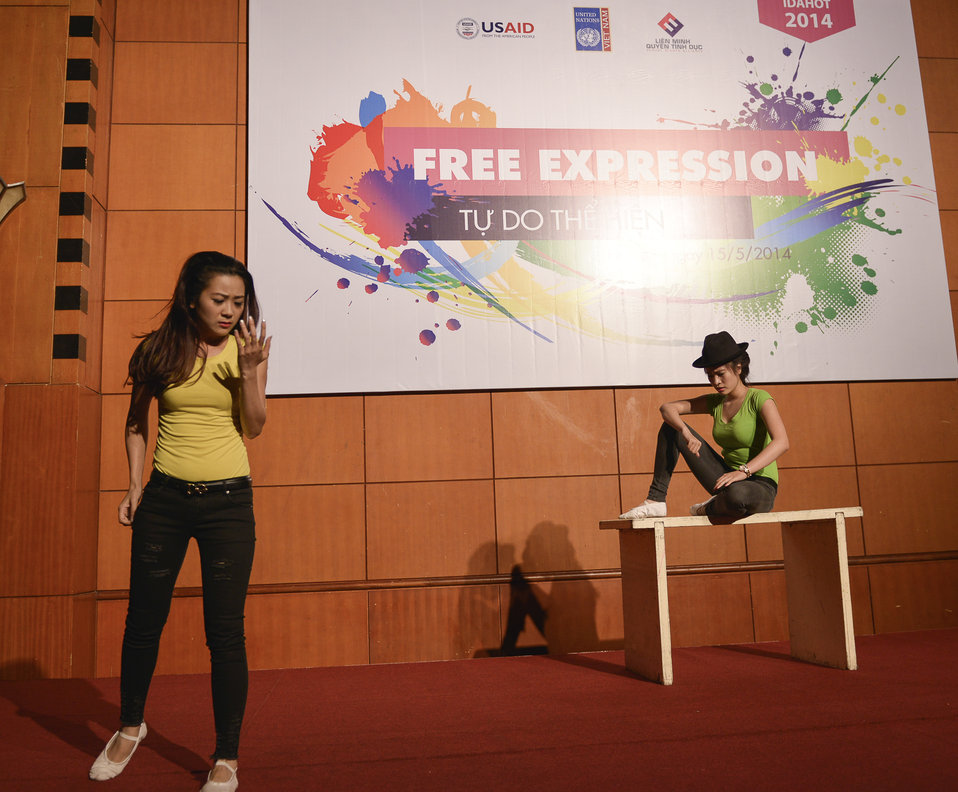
USAID supports celebration of IDAHOT Day 2014 in Hanoi

Hanoi, May 15, 2014.